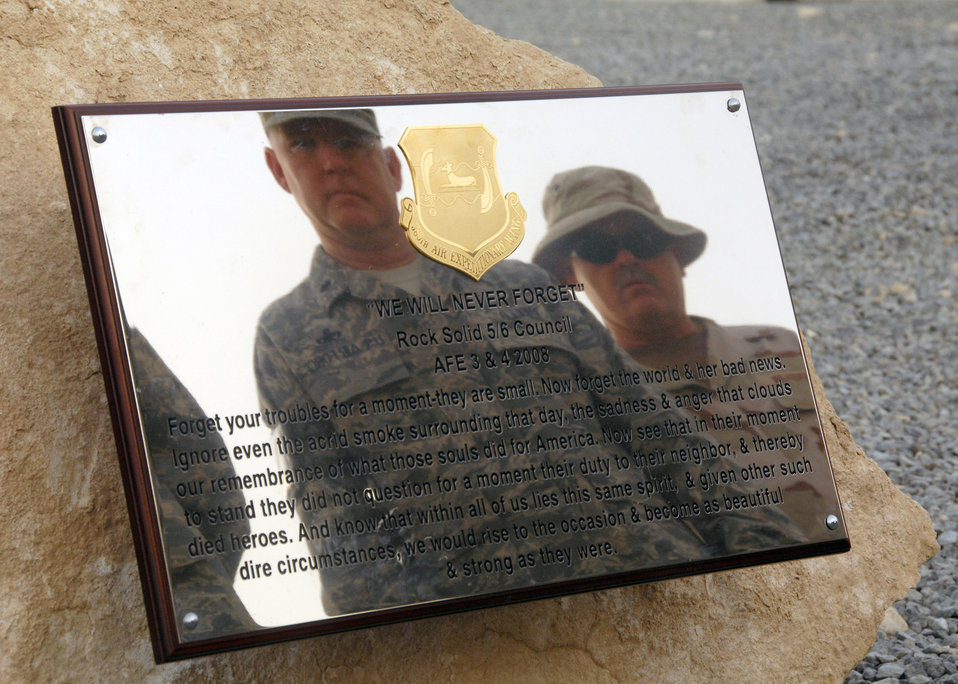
Ceremony inspires members to never forget Sept. 11

Members of the 386th Air Expeditionary Wing read the inscription on the Sept. 11 memorial plaque after the remembrance ceremony Sept. 11 at an air base in Southwest Asia. The ceremony included a wreathlaying ceremony, a 21-gun salute and the playing of